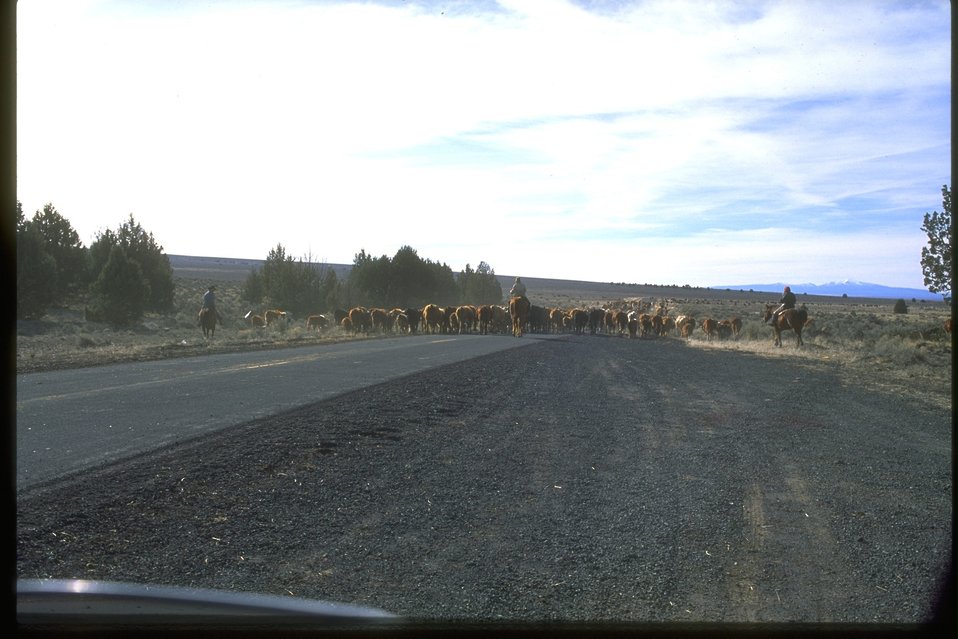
Cattle drive crossing road.